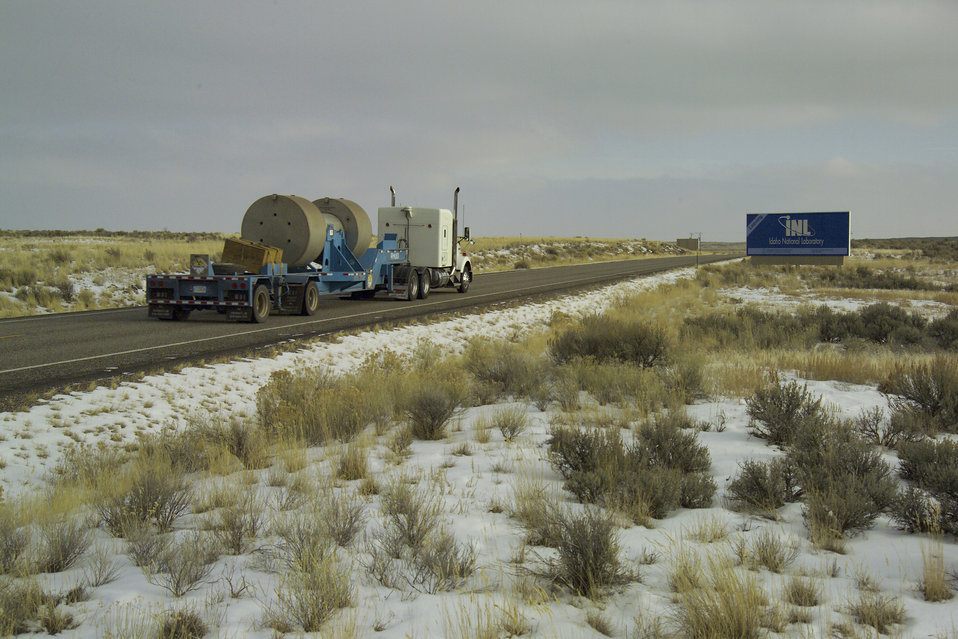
TRU shipments leaving Idaho Site

RH-TRU shipments leaving the Idaho Site.